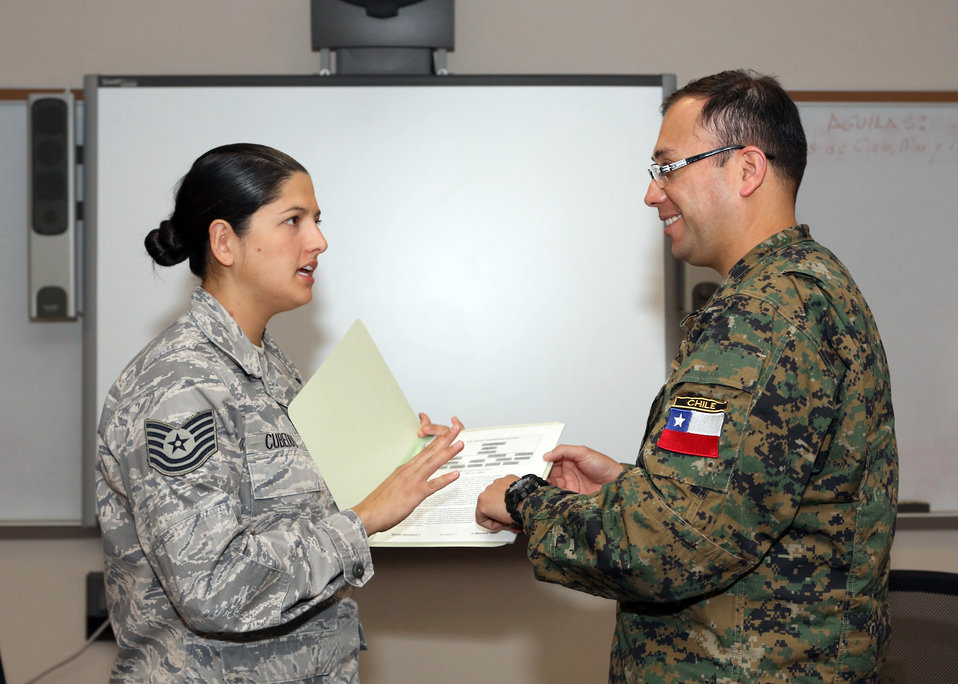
Inter-American Air Forces Academy

U.S. Air Force Tech. Sgt. Janeth Cubeddu and Chilean Army Sgt. Segundo
Claudio Lopez Ramirez discuss similarities and differences in
hierarchies and structure between U.S. and Chilean military services at the Inter-American Air Forces Academy in Joint Base San Antonio-Lackland, TX, Dec. 5, 2012.